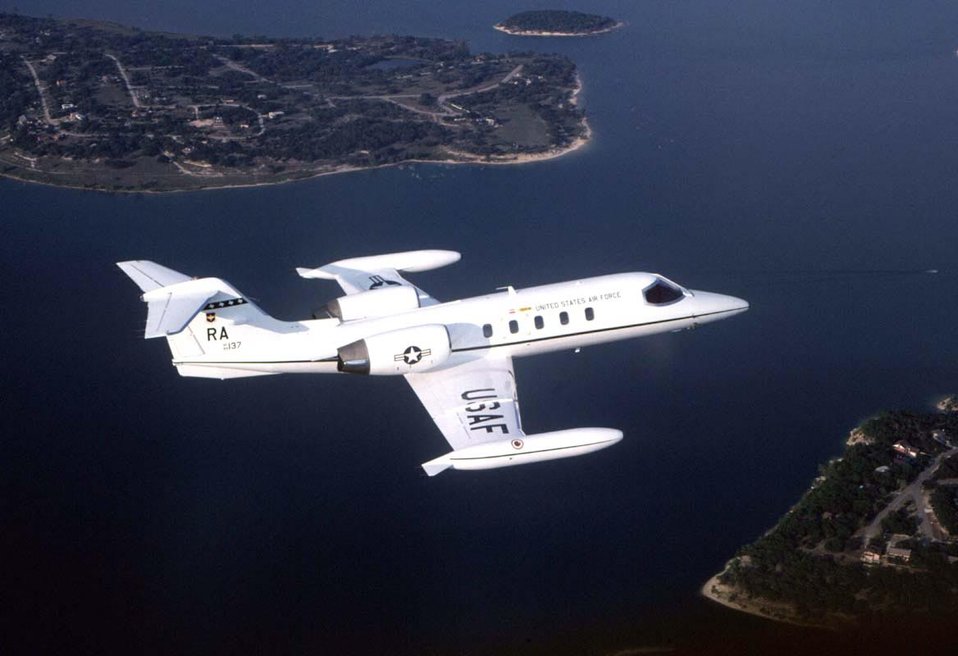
C-21A

FILE PHOTO -- The C-21A provides cargo and passenger airlift and can transport litters during medical evacuations. The C-21A's turbofan engines are pod-mounted on the sides of the rear fuselage. The swept-back wings have hydraulically actuated, single-slotted flaps. The aircraft has a retractable tricycle landing gear, single steerable nose gear and multiple-disc hydraulic brakes. The C-21A can carry eight passengers and 42 cubic feet (1.26 cubic meters) of cargo. The fuel capacity of the C-21A is 931 gallons (3,537.8 liters) carried in wingtip tanks. The safety and operational capabilities of the C-21A are increased by the autopilot, color weather radar and tactical air navigation (TACAN) system, as well as HF, VHF and UHF radios. Delivery of the C-21A fleet began in April 1984 and was completed in October 1985. Glasco, a subsidiary of Learjet, Inc., provides full contractor logistics support at 16 worldwide locations.